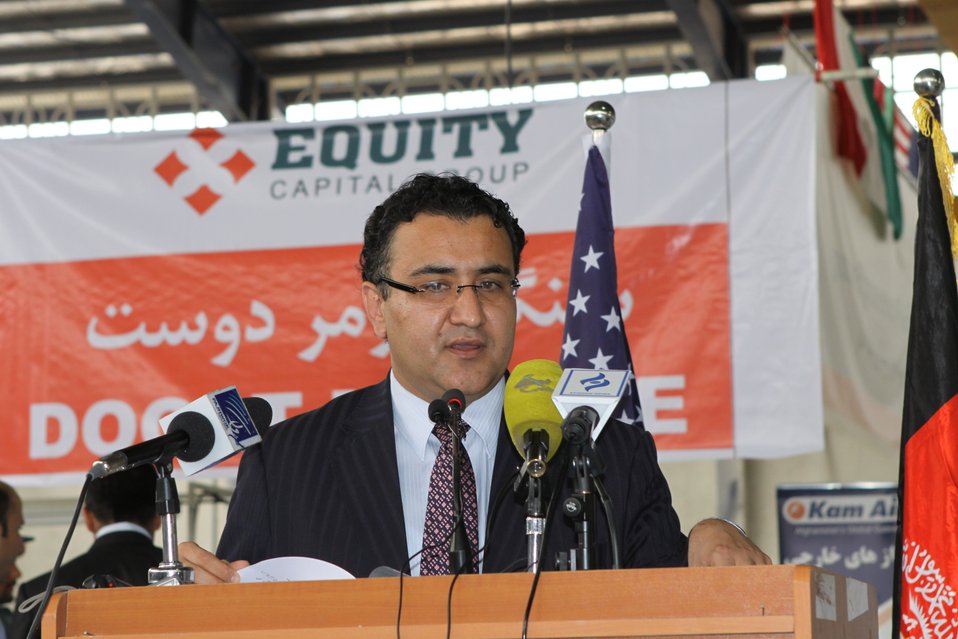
100525 Hirat Marble Conference 192